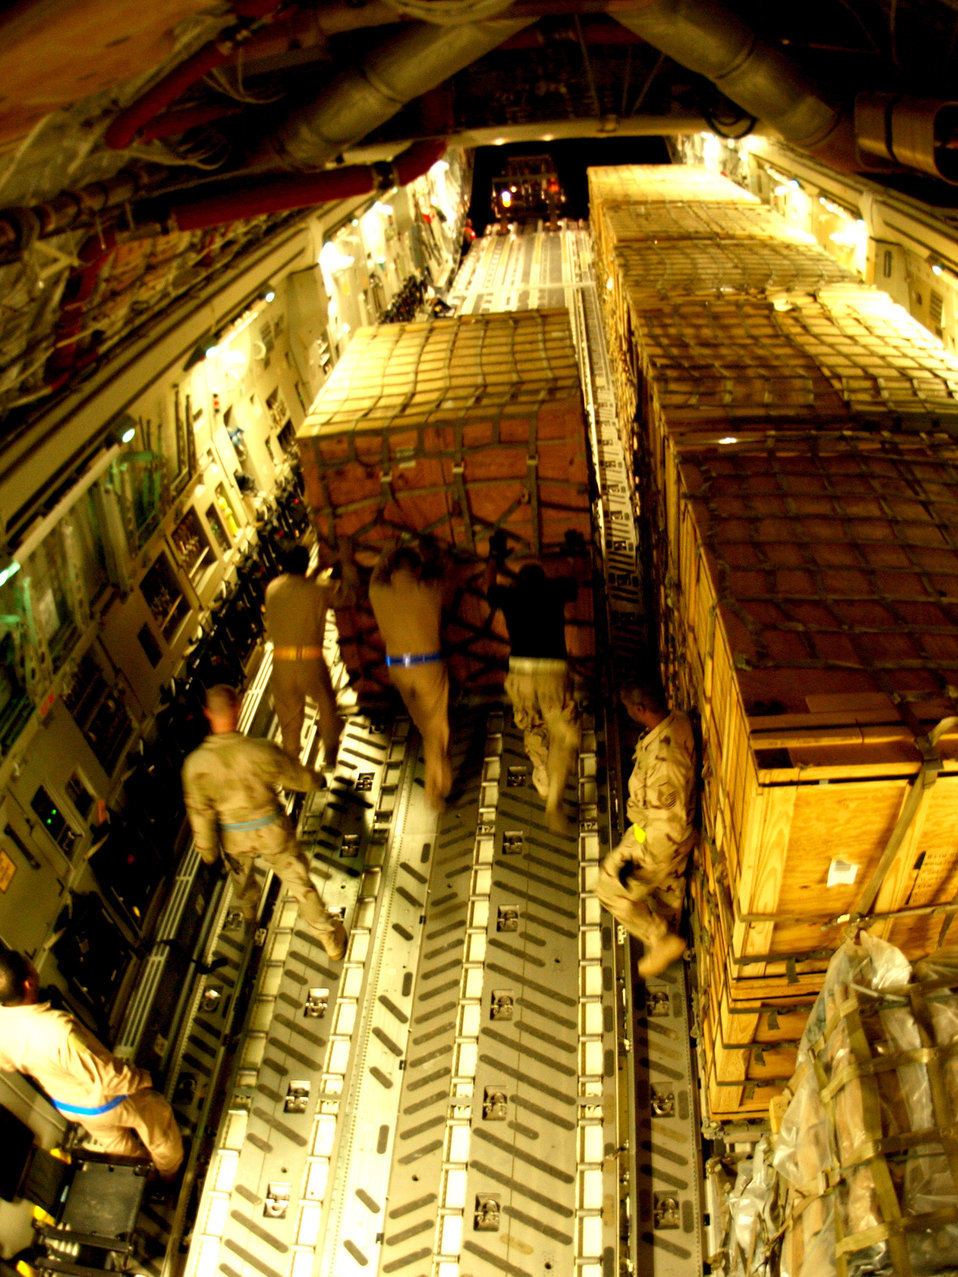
Operation Iraqi Freedom

ISLAMABAD, Pakistan -- Airmen unload cargo from a C-17 Globemaster III here Oct. 11. The aircraft, from the 379th Air Expeditionary Wing at McChord Air Force Base, Wash., flew in approximately 50 tons of food and shelter equipment as part of the Pakistan earthquake relief effort. The earthquake has killed an estimated 40,000 people and has left thousands more injured in Afghanistan, Pakistan, India and the Kashmir region.